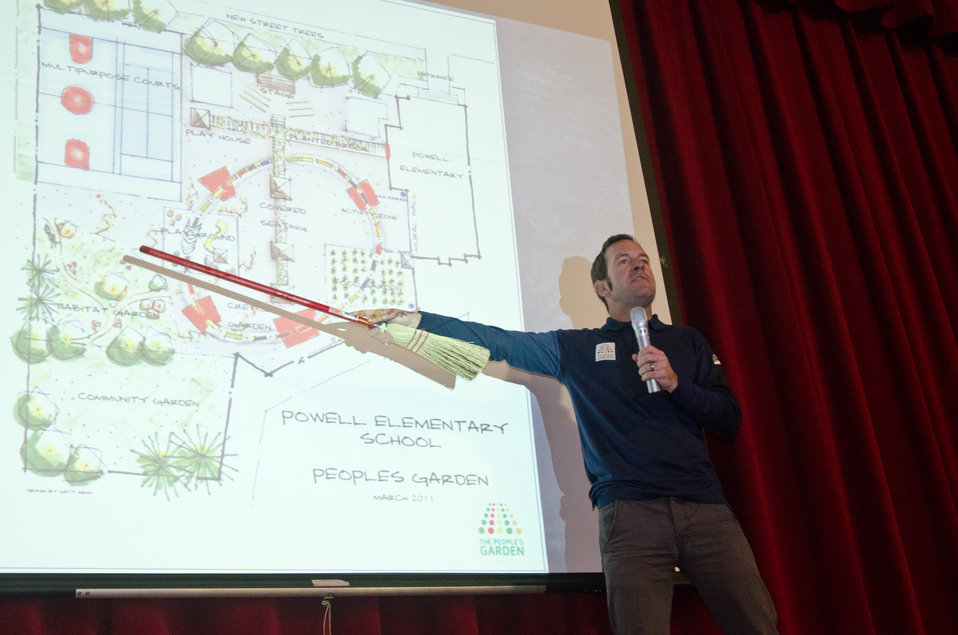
The People’s Garden team architect Matt Arnn uses a broomstick on Thursday, March 10, 2011, to point out feature ideas that he incorporated from provided illustrations from parents and students at the W. B. Powell Elementary School, Washington D.C., talks about the work put into designing the School Garden Concept for the . This People’s Garden team consists of the Washington Capitols, U.S. Department of Agriculture and D.C. Public Schools in Washington, D.C. Their presentation will support the 289 parents and students. The design draft was created by Forest Service landscape architect Matt Arnn, with the support of Natural Resources Conservation Service landscape architect Bob Sneickus, Outreach and Education Coordinator Annie Ceccarini and Project Manager Leslie Burks who worked with the Principal Janeece Docal and the school during an earlier visit to develop illustrated ideas from parents and students. Representing the Washington Capitols is Defenseman, Number: 52 Mike Green, Comcast SportsNet Analyst Alan May and Director of Community Relations Elizabeth Wodatch.